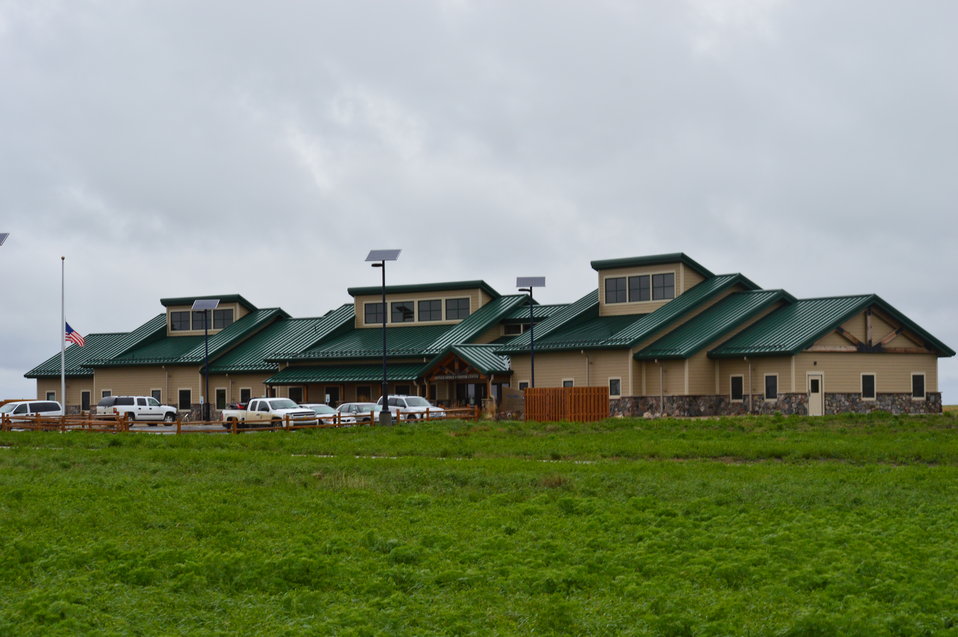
Audubon NWR Visitor Center and Offices

Audubon NWR Visitor's Center and office building has an exhibit hall featuring wetlands and grassland habitat, migratory birds, refuge history and more. Also in the building are USFWS offices and a store.